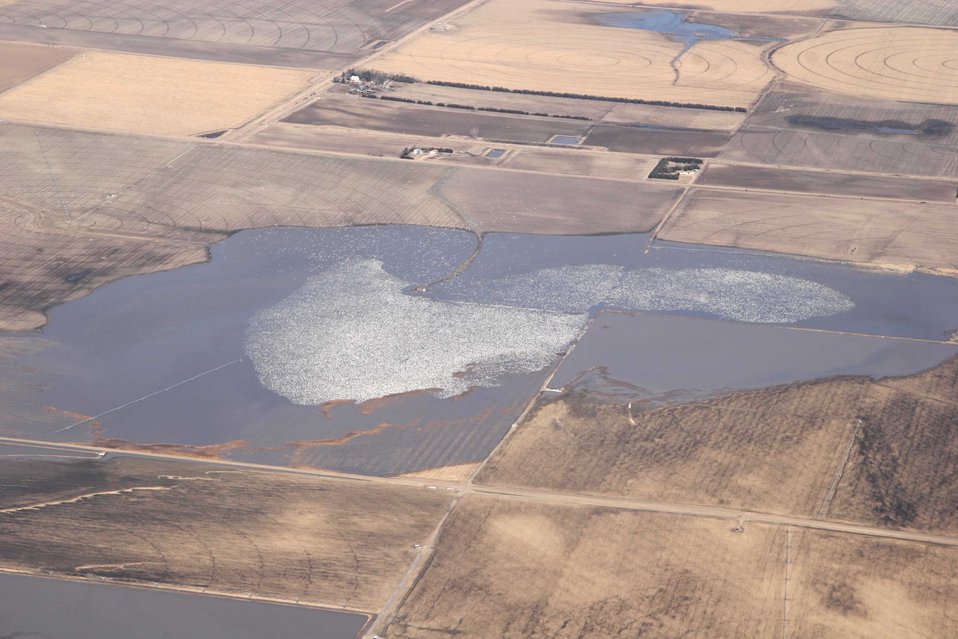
Snow Geese using a Wetland in the RWB During Spring Migration

Approximately 332,000 snow geese on a Rainwater Basin wetland during spring migration. This is an untouched photo of a privately owned wetland known as Moses Hill in Phelps Co., NE. The few remaining wetlands in this region concentrate watefowl in spectacular numbers each spring.

Taken: March 9, 2007

Credit: Jeff Drahota / USFWS

Photo Contest Entry #174